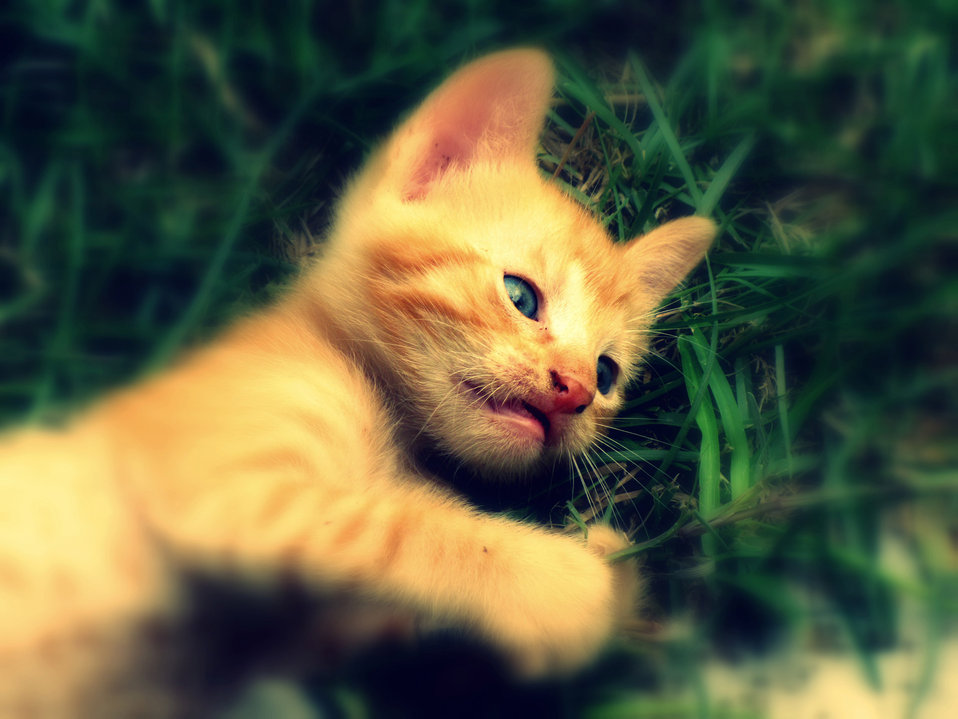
Kitten playing.